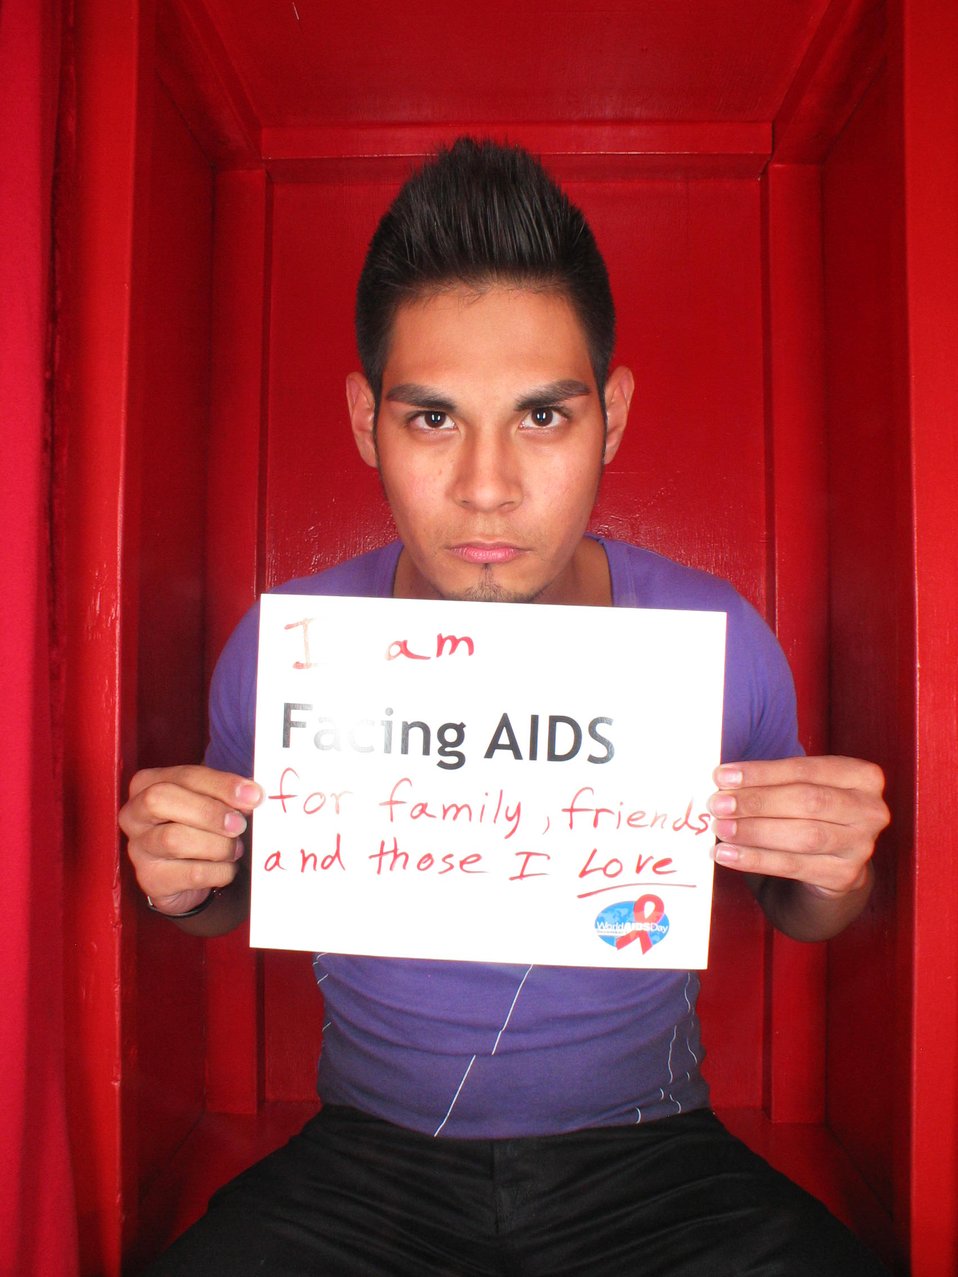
I am Facing AIDS for family, friends and those I love.